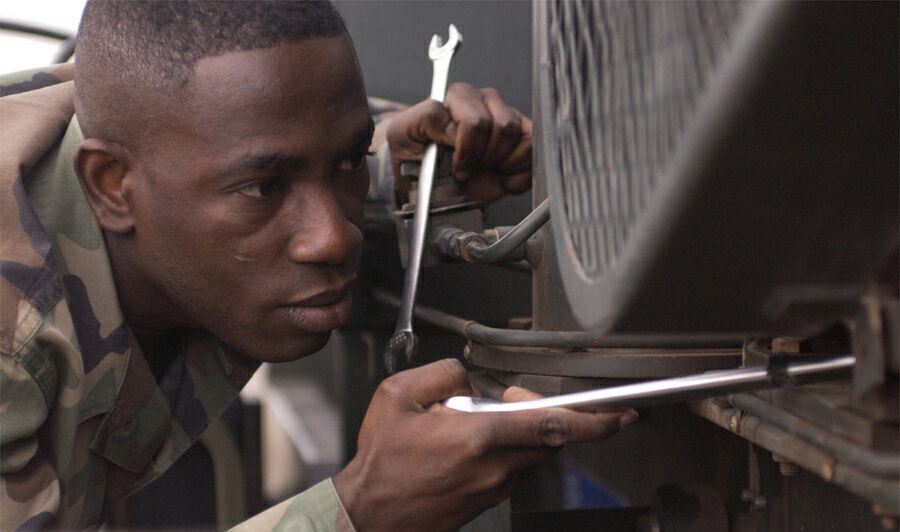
NCO becomes citizen after 3-year struggle

HOLLOMAN AIR FORCE BASE, N.M. -- Staff Sgt. Emmanuel Techie takes out a pump on a mobile aircraft arresting system. Techie, a native of Ghana, Africa, was sworn in as a U.S. citizen after a three-year wait. He is currently a power production journeyman with the 49th Civil Engineer Squadron at Holloman Air Force Base, N.M.